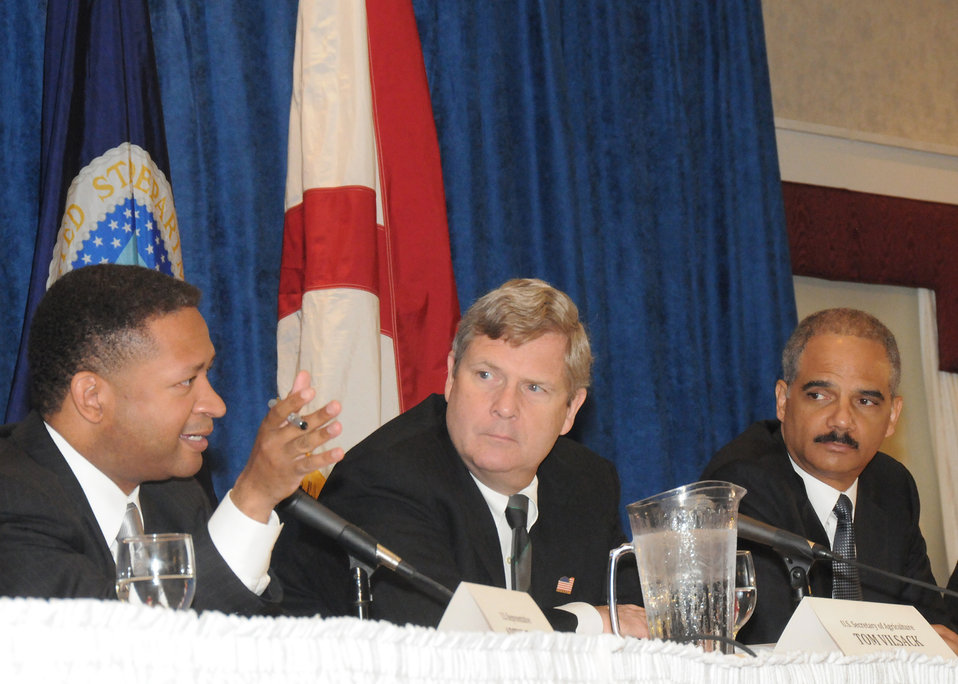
U. S. Department of Justice and the U. S. Department of Agriculture hold a listening session on “Agriculture and Antitrust Enforcement Issues in Our 21st Century Economy “ with poultry farmers at Alabama A & M University in Normal, AL, on Friday, May 21, 2010. ( L to R Alabama (D 7th District) Congressman Artur Davis, Agriculture Secretary Tom Vilsack and Attorney General Eric Holder) USDA photo 10di1361-181.